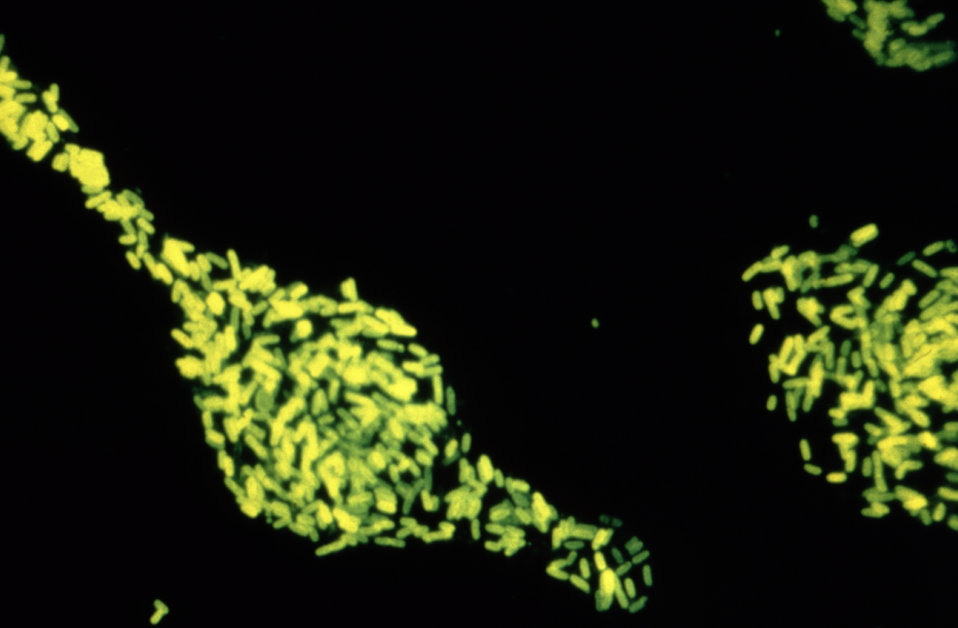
This photograph depicts Salmonella sp. bacteria that had been cultured in a tetrathionate-enrichment broth, and stained using the direct fluorescent-antibody (FA) technique.